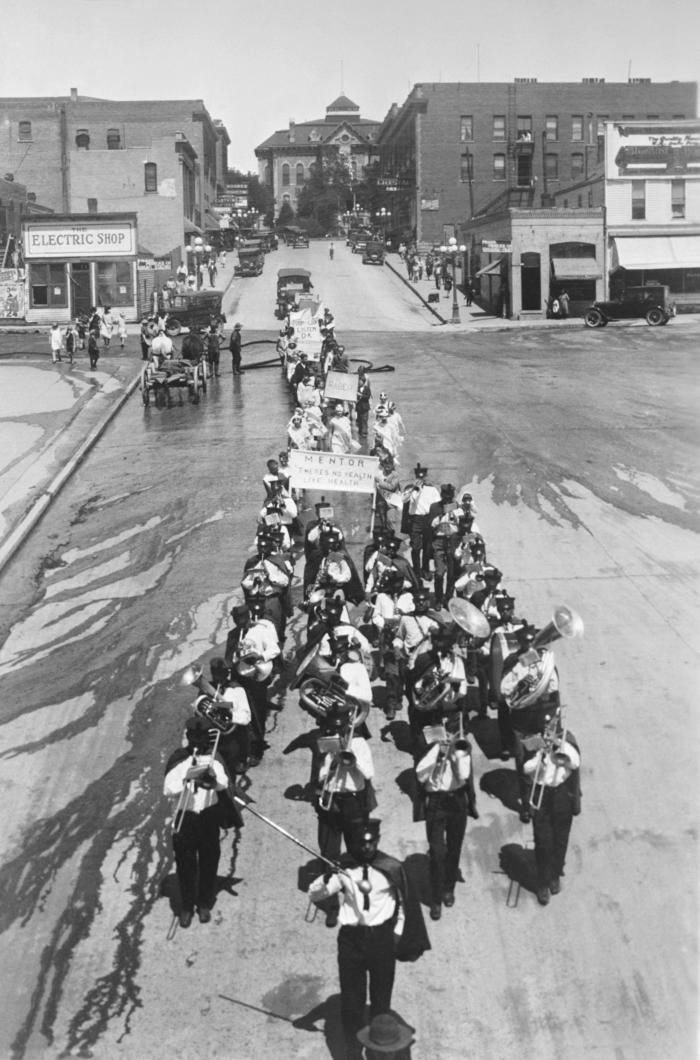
This historic photograph depicted a marching band that was leading a parade in a South Dakota town. The participants were carrying signs promoting good health. The original image was scanned from a glass lantern slide donated by the Minnesota Department of Health, and is one of a historical collection devoted to observances of Child Health Day in the United States.